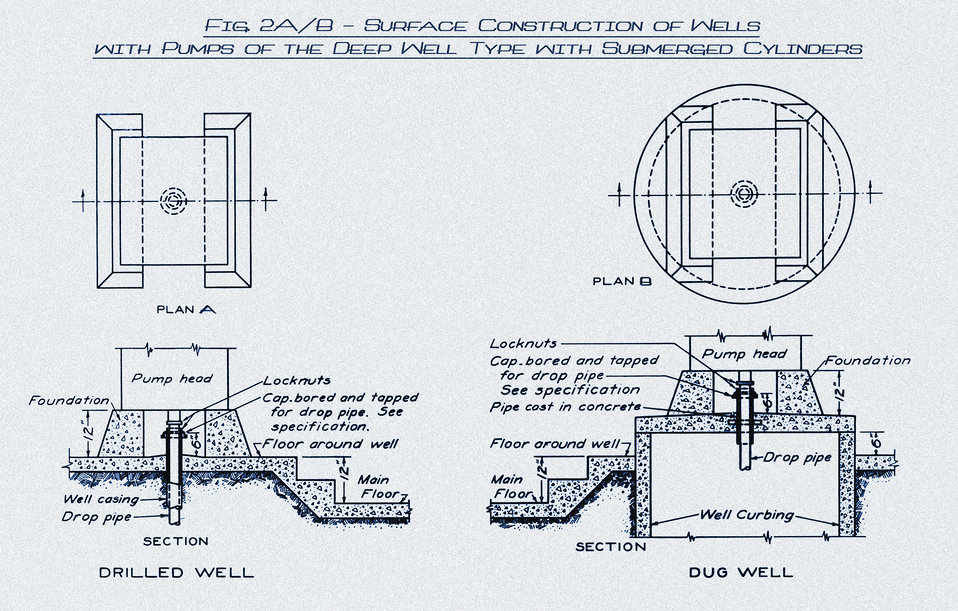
This historic diagram, which has been digitally enhanced and colorized, depicted the surface construction of 'dug'-, 'drilled'-, and 'driven'-type wells that had been equipped with pumps of the 'deep well'-type, and submerged internalized cylinders. The cross-sectional renderings identified the components, and placed them into the approximate relationship to one another, in their optimal positions, in order to achieve maximum performance efficiency.